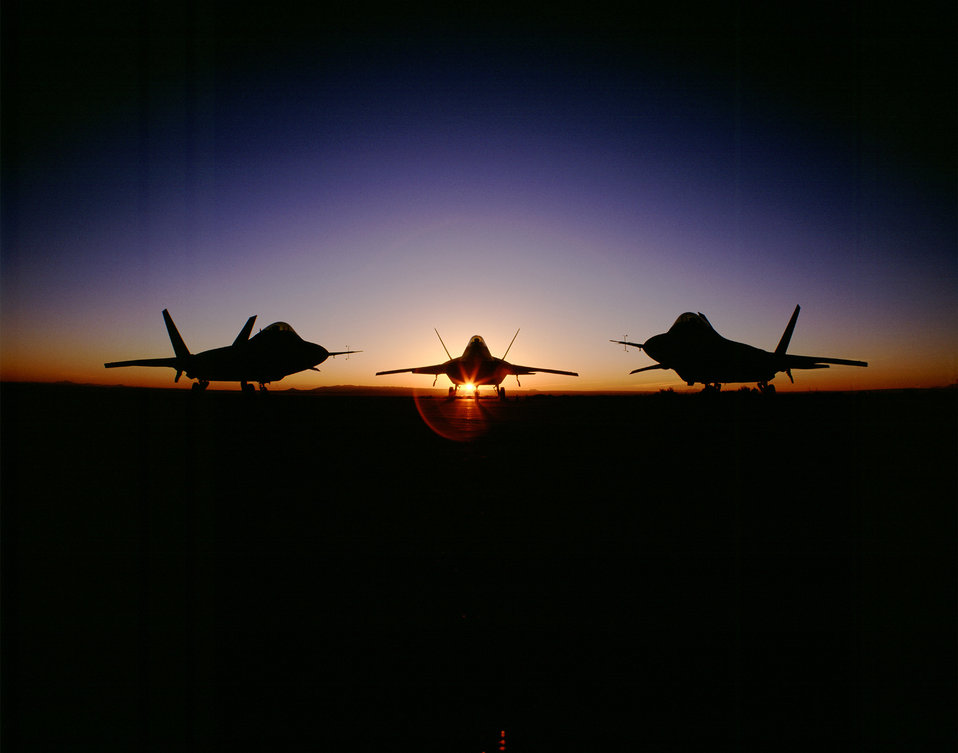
Sunset Raptor

The F/A-22 Raptor, developed at Aeronautical Systems Center, Wright-Patterson Air Force Base, Ohio, is the replacement for the F-15 Eagle air-superiority fighter and will become operational this century. It combines stealth design with the supersonic, highly maneuverable, dual-engine, long-range requirements of an air-to-air fighter, and it also will have an inherit air-to-ground capability, if needed.